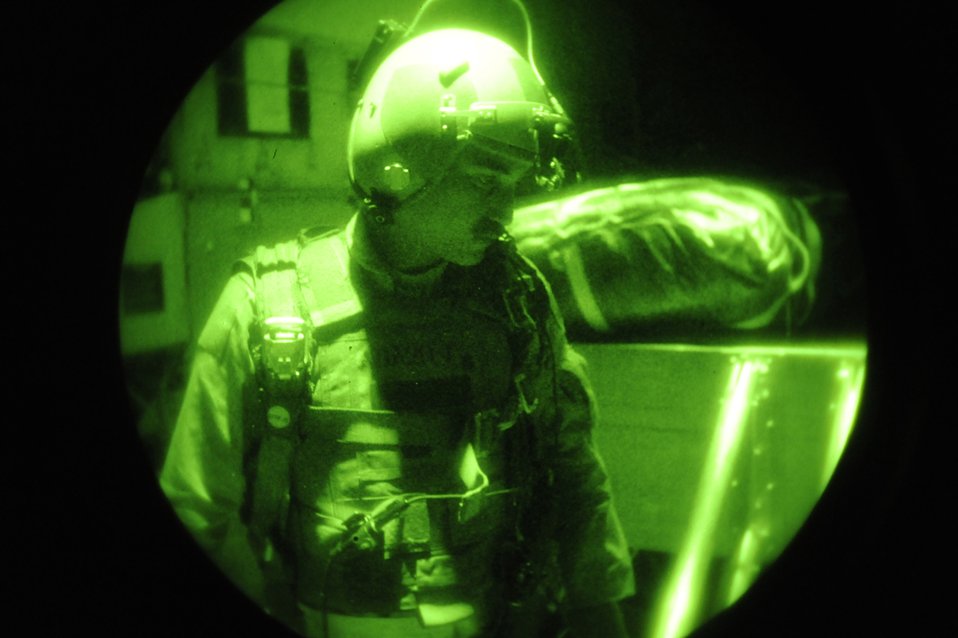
Airdrop fuels austere Afghan locations

Tech. Sgt. Wayne Witter prepares for a night airdrop to deliver JP-8 fuel to troops on the ground July 17 over southwestern Afghanistan. Sergeant Witter is a C-130J Super Hercules loadmaster assigned to the 772nd Expeditionary Airlift Squadron at Kandahar Airfield, Afghanistan.